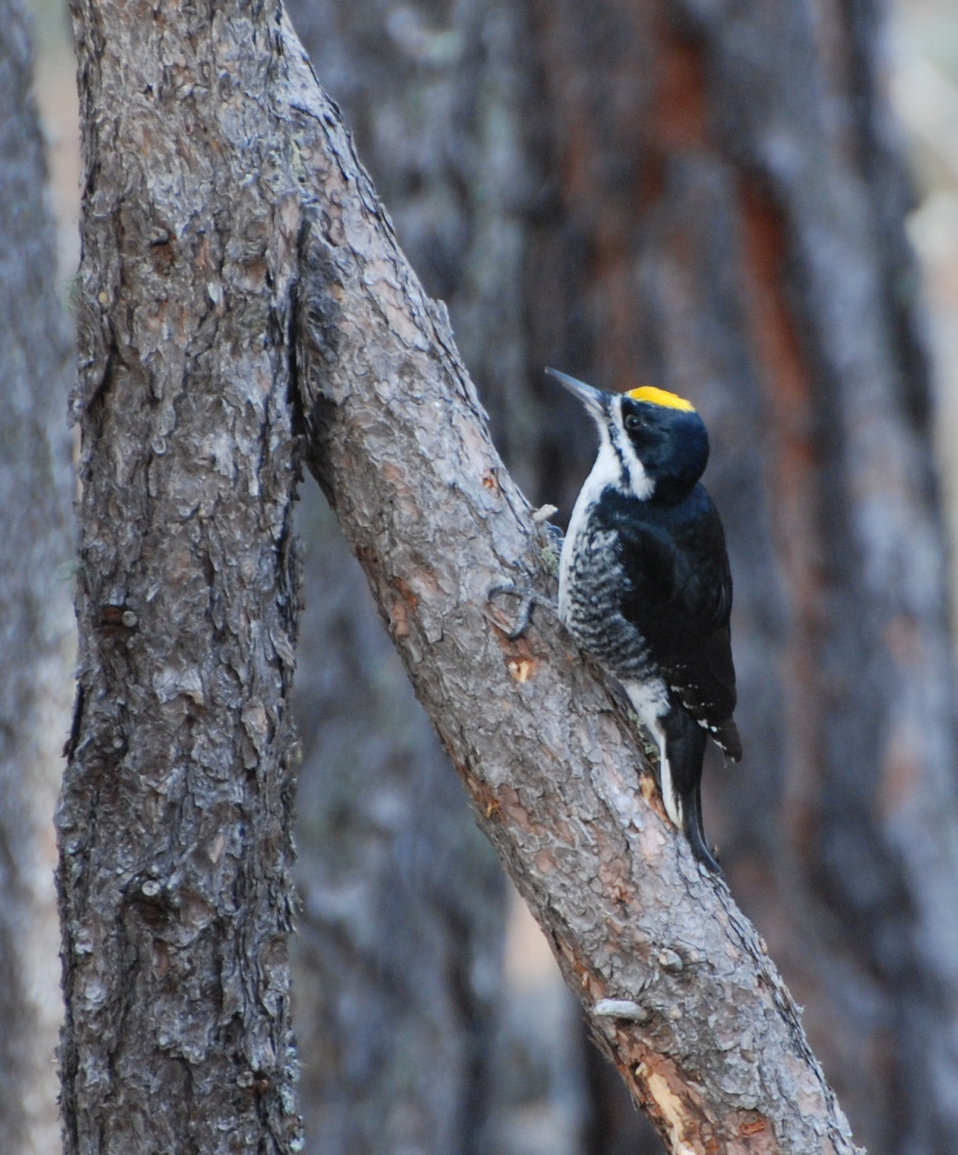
Male Black-backed woodpecker